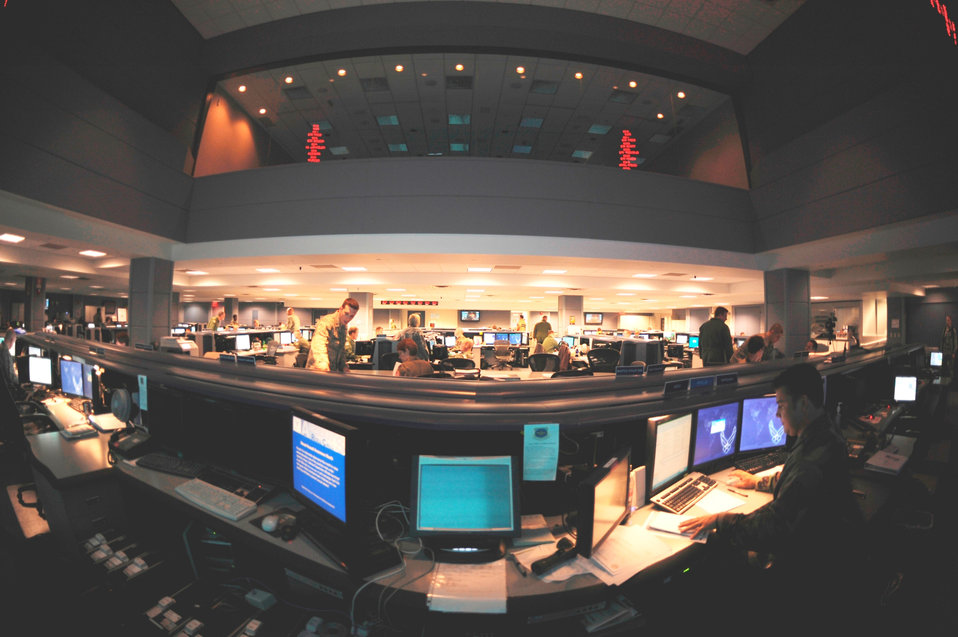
Flights adjusted due to volcanic activity

Members of the 618th Tanker Airlift Control Center coordinate with aircrews, maintenance personnel and aerial porters around the world from the 618th TACC operations floor March 17, 2009, at Scott Air Foce Base, Ill.